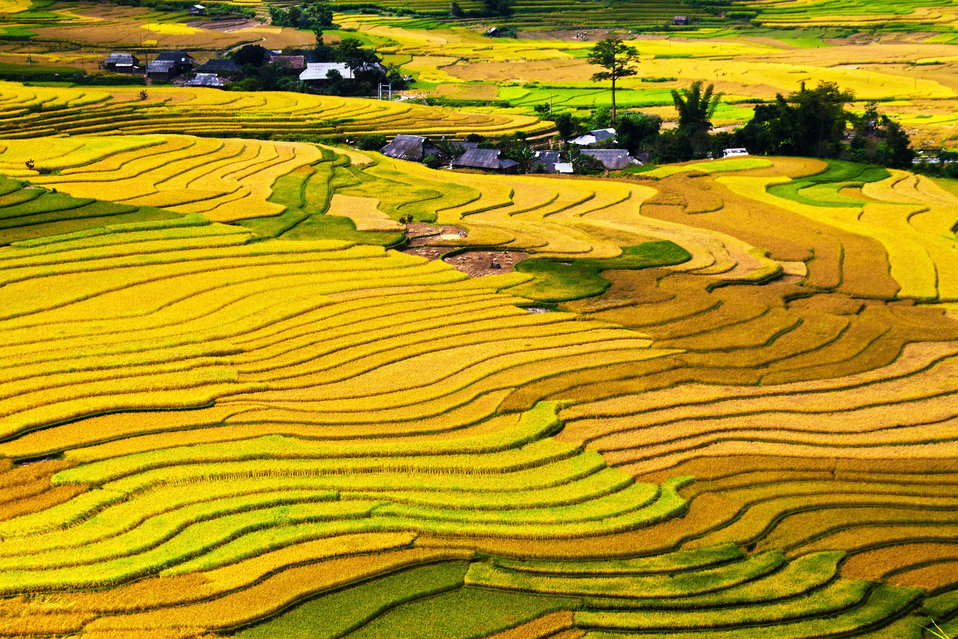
Tú lệ valley

Terraced fields in văn chấn district, yen bai province, vietnam's northwest.